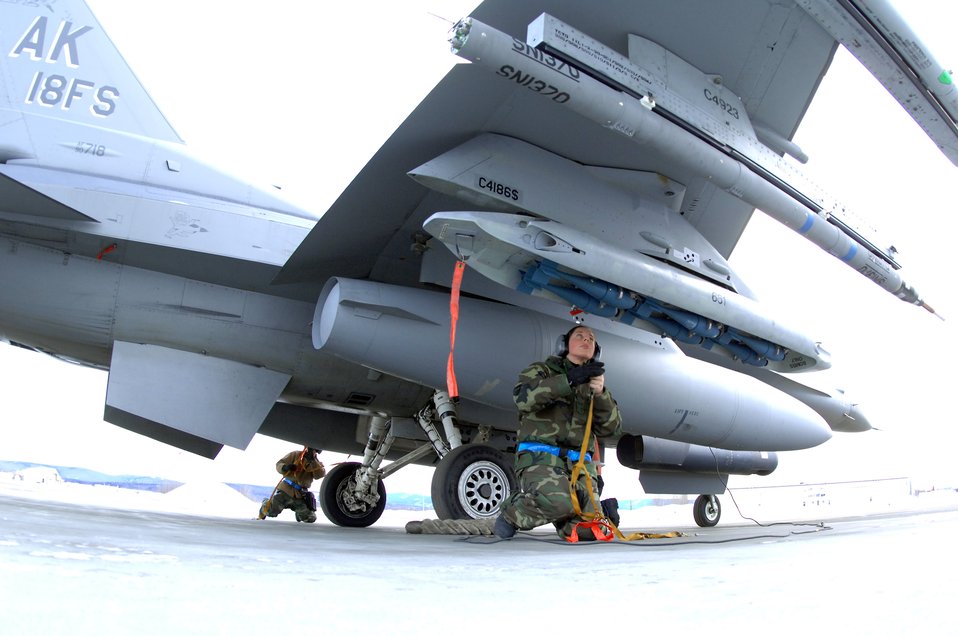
A chilling task

Senior Airman Amanda Debkowski (front) and Senior Airman Joshua McCathern prep an F-16 Fighting Falcon Feb. 8 at Eielson Air Force Base, Alaska. The 354th Maintenance Squadron Airmen are responsible for arming all weapons and making sure aircraft are ready for flight. The 18th Fighter Squadron conducts air operations for combat-ready F-16 aircraft and provides close-air support, forward air control, battlefield air interdiction, and offensive counter air.